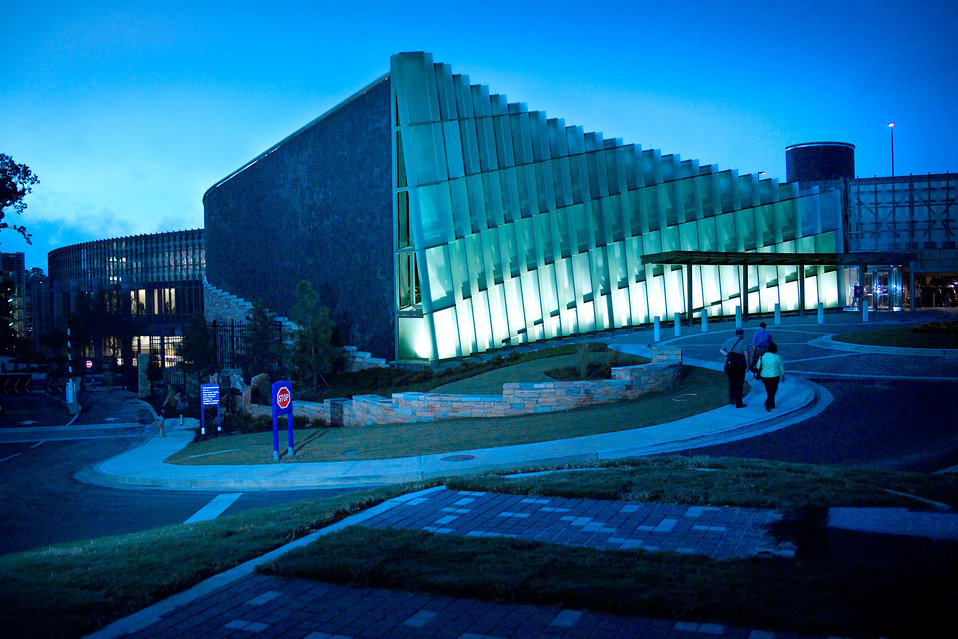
Captured during the early evening hours, September, 2005, this photograph depicted the exterior of the Centers for Disease Control's (CDC) Tom Harkin Global Communications Center, otherwise known as Building 19.